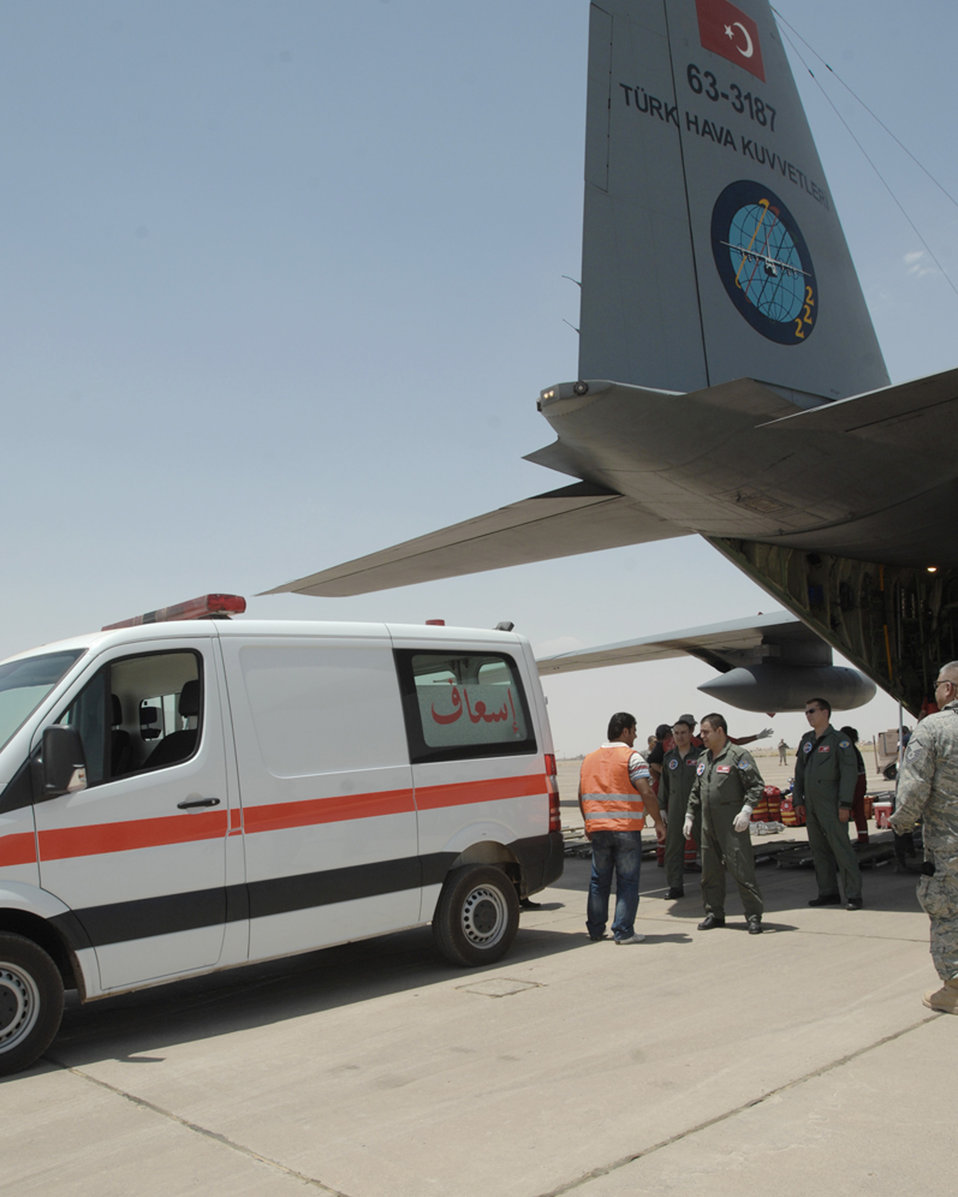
Coalition forces, Kirkuk officials partner to care for bombing victims

An Iraqi ambulance driver talks with a Turkish air force aircrew member at the tail of a Turkish air force C-130 before loading patients on the aircraft June 22 at Kirkuk Air Base, Iraq. U.S. and Turkish airmen, U.S. State Department and Army officials at the Kirkuk Provincial Reconstruction Team, and Turkish Red Crescent Society medical responders helped coordinate and facilitate an aeromedical evacuation to Ankara, Turkey, for 11 victims of a June 20 suicide truck bombing in Taza District south of Kirkuk city. More than 80 people were killed and 250 injured in the blast.